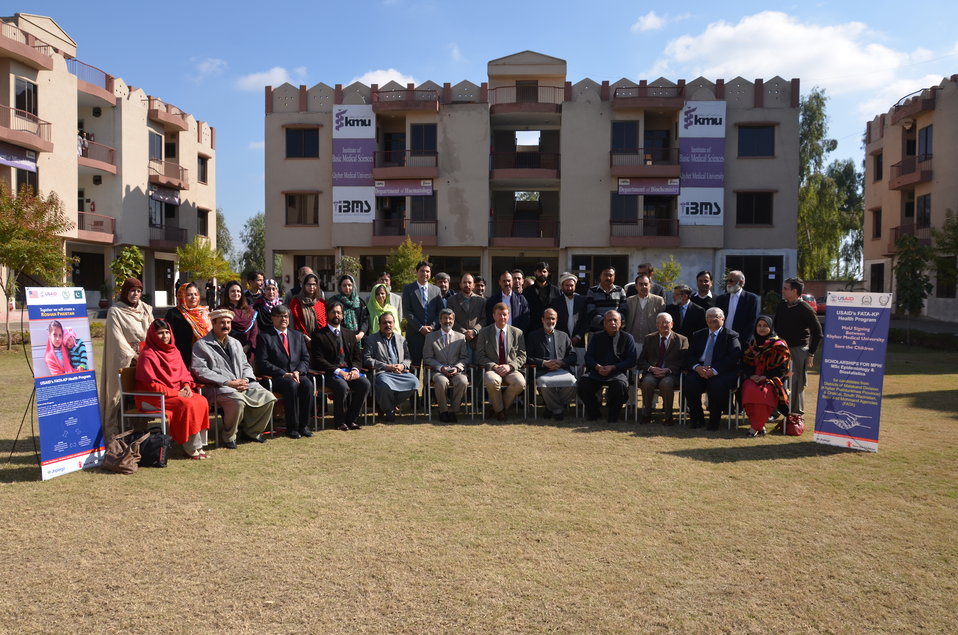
Launch of MPH program for FATA and KP health professional

USAID's FATA-KP health Program launched a 2 year MPH program for health professional of FATA and KP at Khyber Medical University Peshawar